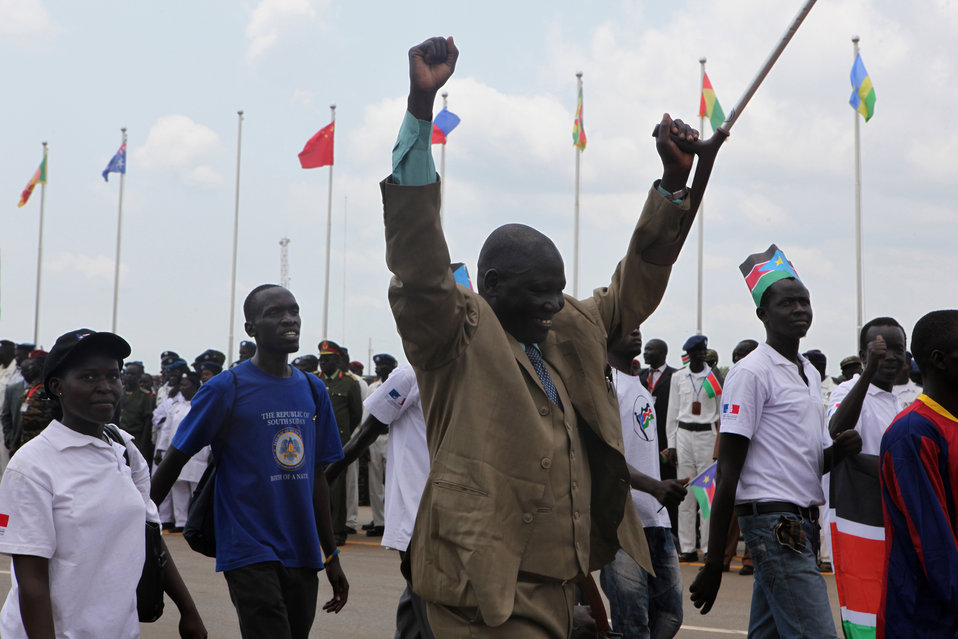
South Sudan Independence Day

Military and civilian parade marches past the Dr. John Garang Mausoleum site during Independence Day celebrations in Juba, South Sudan on July 9, 2011.